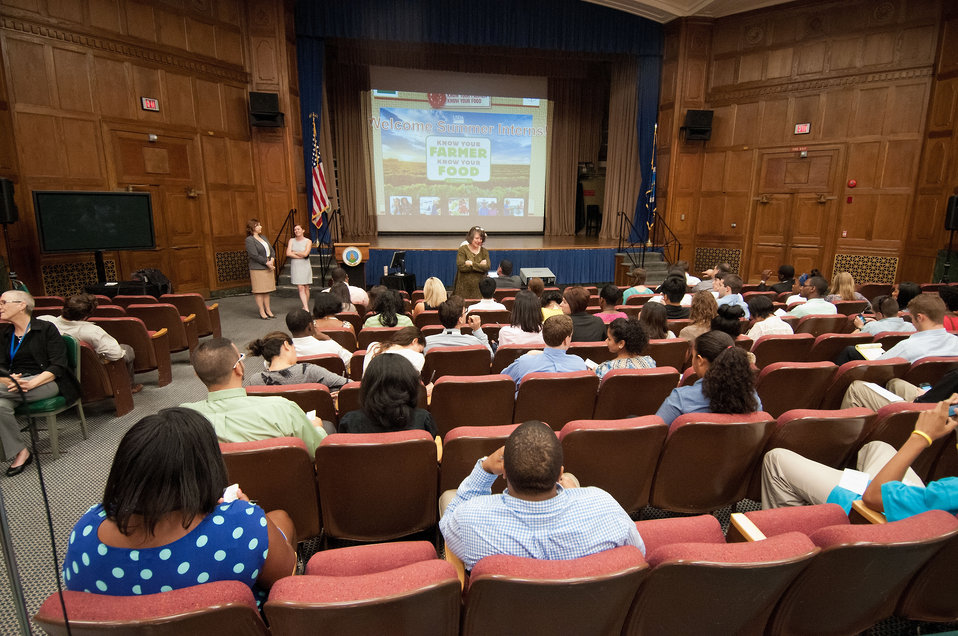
Agriculture Deputy Secretary Dr. Kathleen Merrigan, welcomes United States Department of Agriculture interns to the information tour. Dr. Merrigan discussed with college and university students across the country in an effort for students to understand the breadth and scope of American Agriculture. Dr. Merrigan has taken this same information tour to approximately twenty-seven colleges and universities across the country.